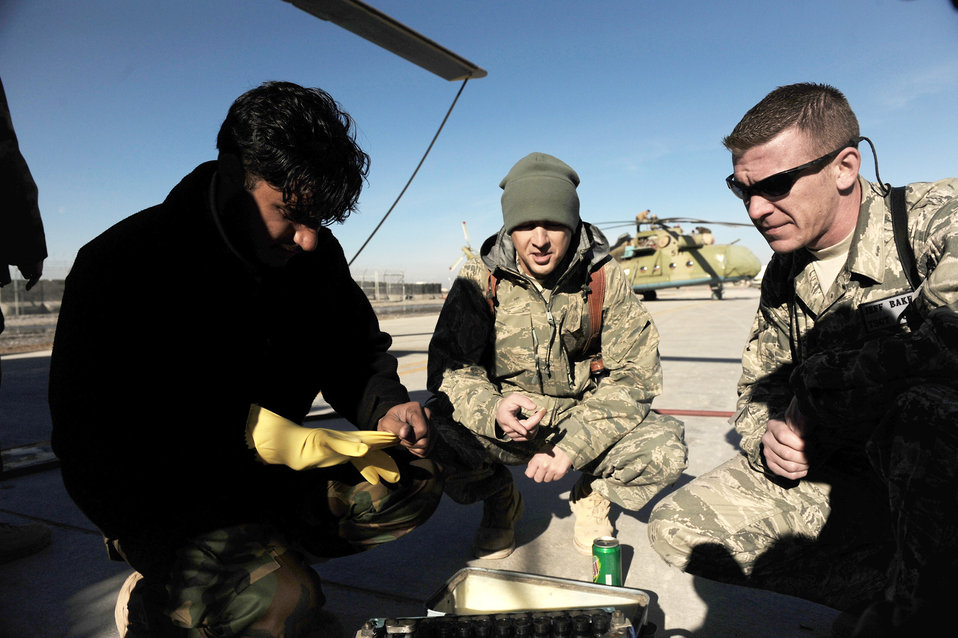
Airmen teach Afghans the art of maintaining

Staff Sgt. Paul Butler (middle) and Tech. Sgt. Jeff Baker (right) check an Afghanistan National Army Air Corps soldier's work on an MI-17 helicopter battery Jan. 5, 2010 at Kandahar Air Field, Afghanistan. Sergeant Butler is deployed from Tinker Air Force Base, Okla. and Sergeant Baker is from Barksdale AFB, La. Sergeants Butler and Baker are 738th Air Expeditionary Maintenance advisers.